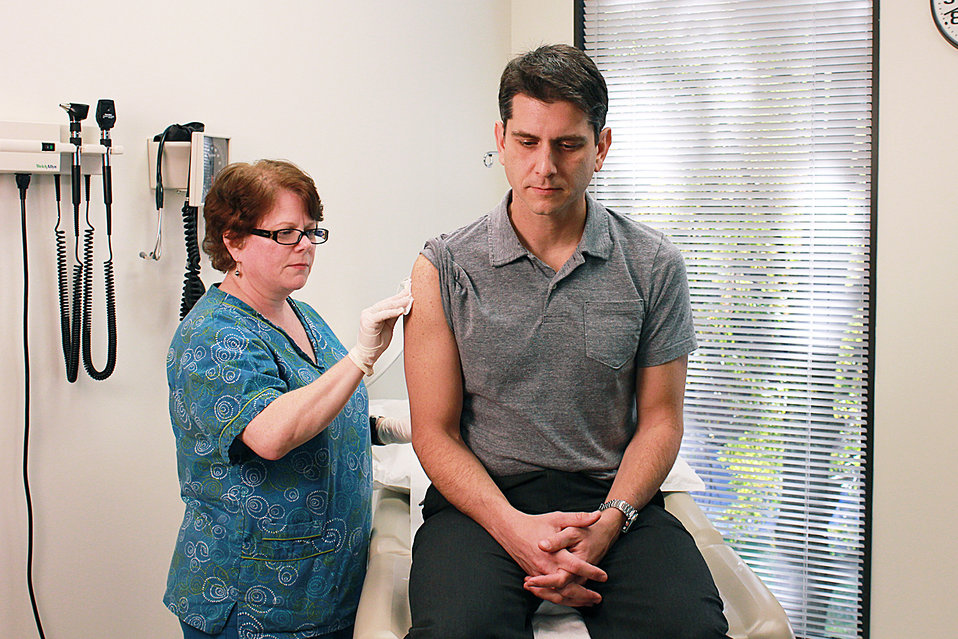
Taken inside a clinical setting, this qualified nurse was in the process of preparing this male patient to accept a properly-administered Fluzone� intradermal influenza virus vaccine. Here, the nurse was sterilizing the patient's right shoulder region, which would subsequently become the injection delivery site.